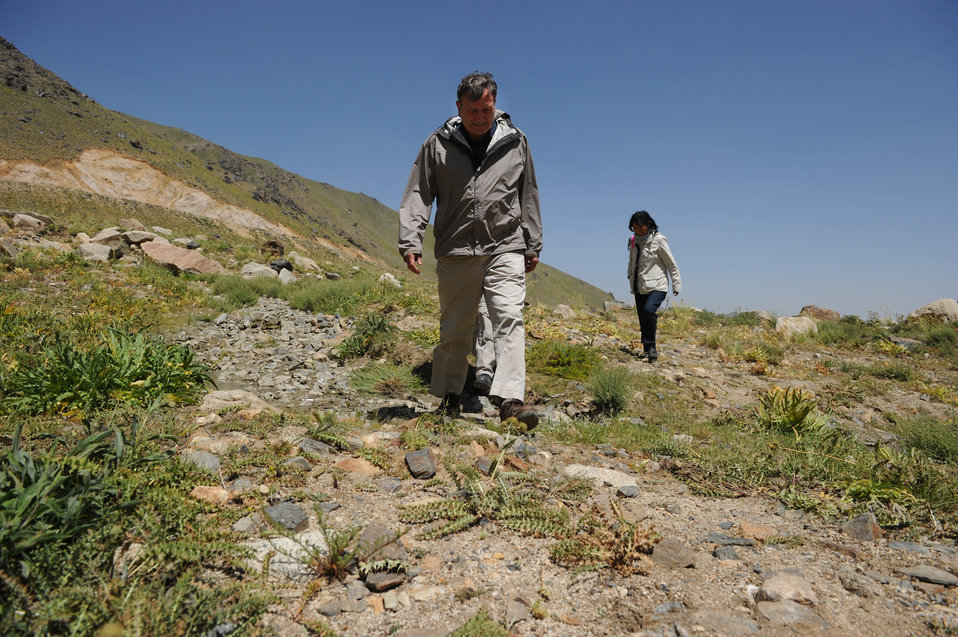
U.S. Ambassador Karl W. Eikenberry attends a ceremony to mark the beginning of renovations at the Salang Tunnel on the border of Parwan and Baghlan Provinces, Afghanistan, on Wednesday, June 15, 2011. (S.K.Vemmer/Department of State)